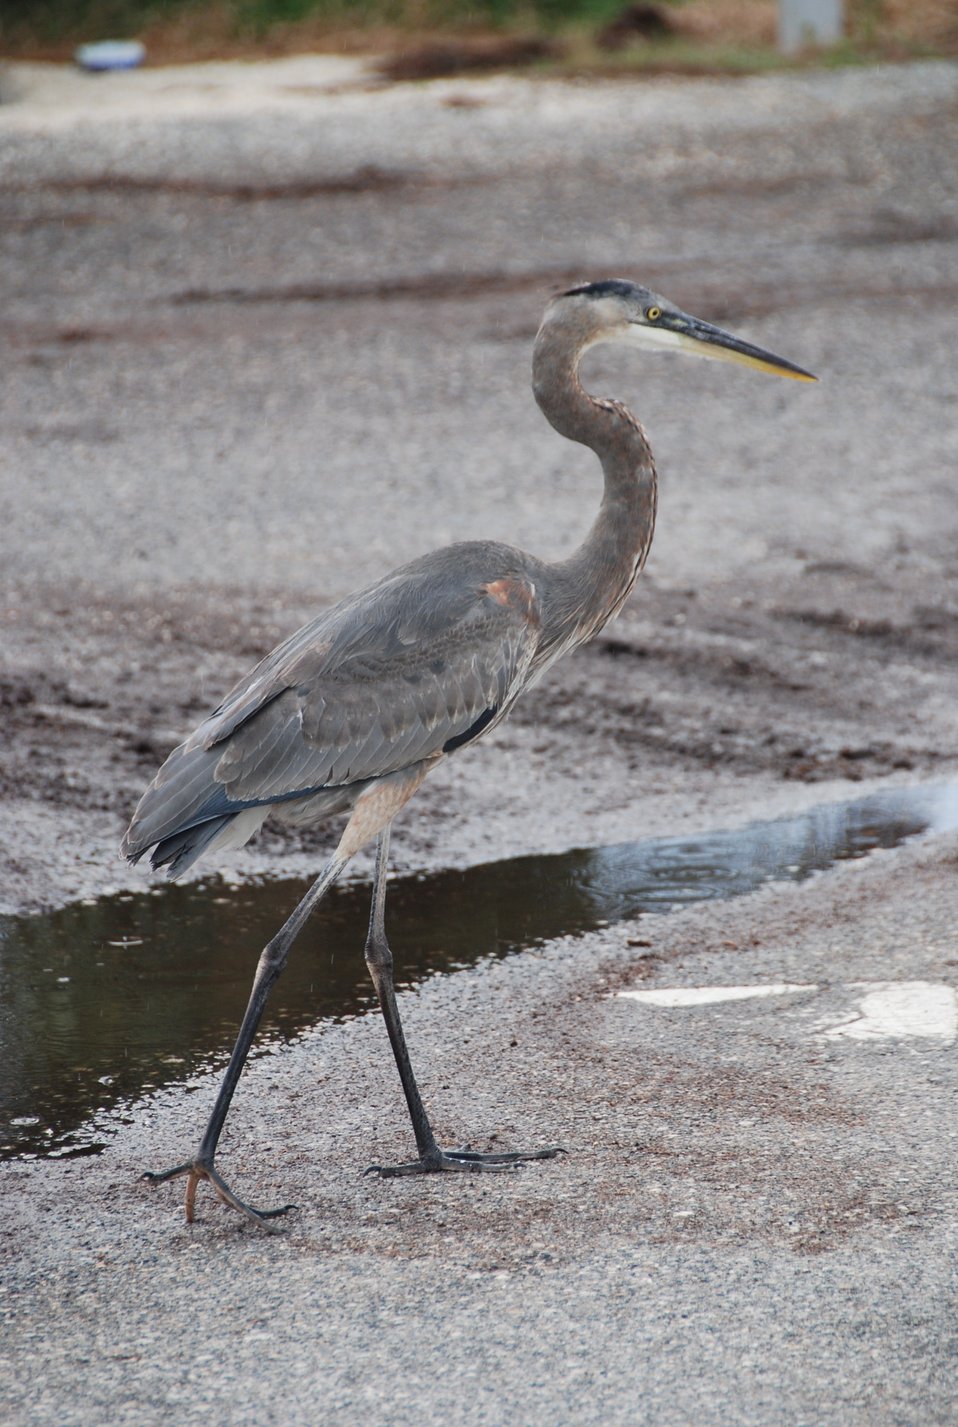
Merritt Island 2

A Heron at Merritt Island. Supported by the North American Wetlands Conservation Act.